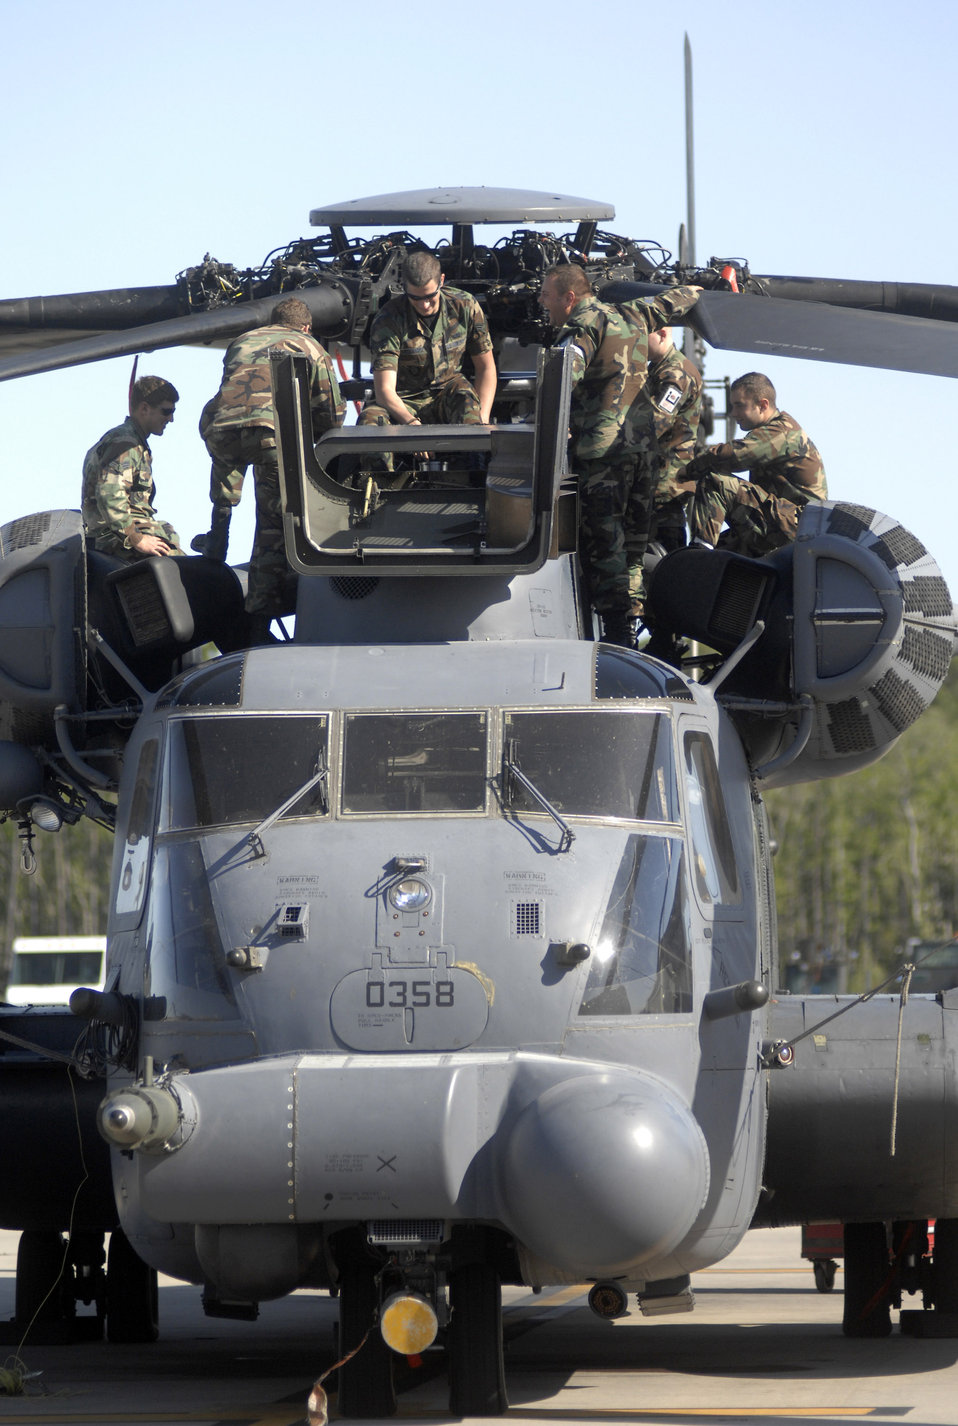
It's a maintenance world

Airmen with the 20th Special Operations Squadron conduct training on the MH-53 Pave Low on the flightline at Hurlburt Field Air Force Base, Fla.